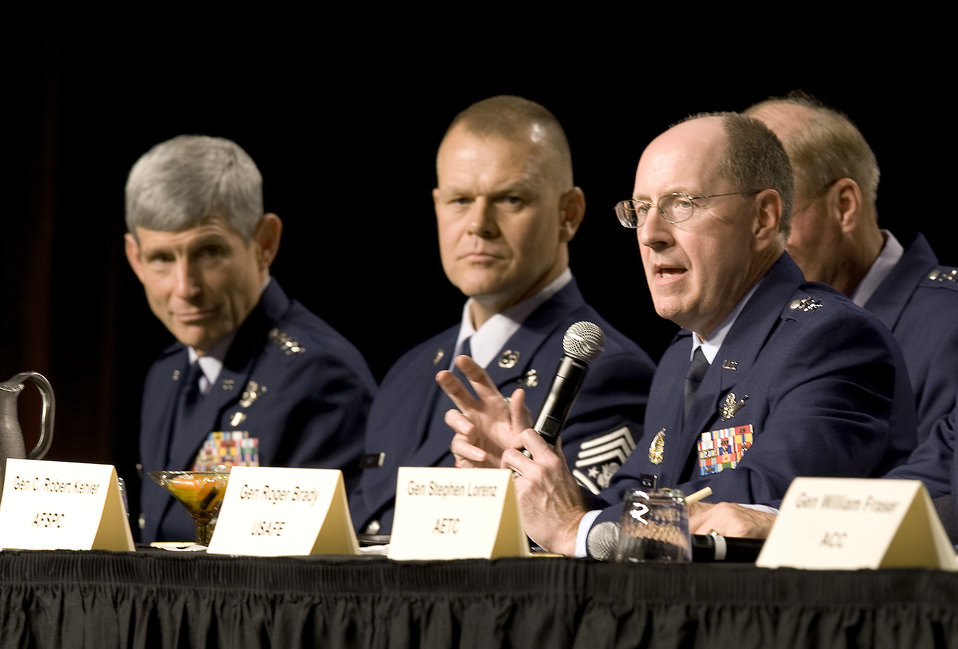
Air Force leaders discuss challenges, achievements

Gen. C. Robert Kehler answers a question during a four-star forum Sept. 15, 2010, at the Air Force Association 2010 Air and Space Conference and Technology Exposition at National Harbor in Oxon Hill, Md. Led by Air Force Chief of Staff Gen. Norton Schwartz, the forum provided a chance for conference attendees to pose questions directly to Air Force senior leaders. General Kehler is the Air Force Space Command commander.